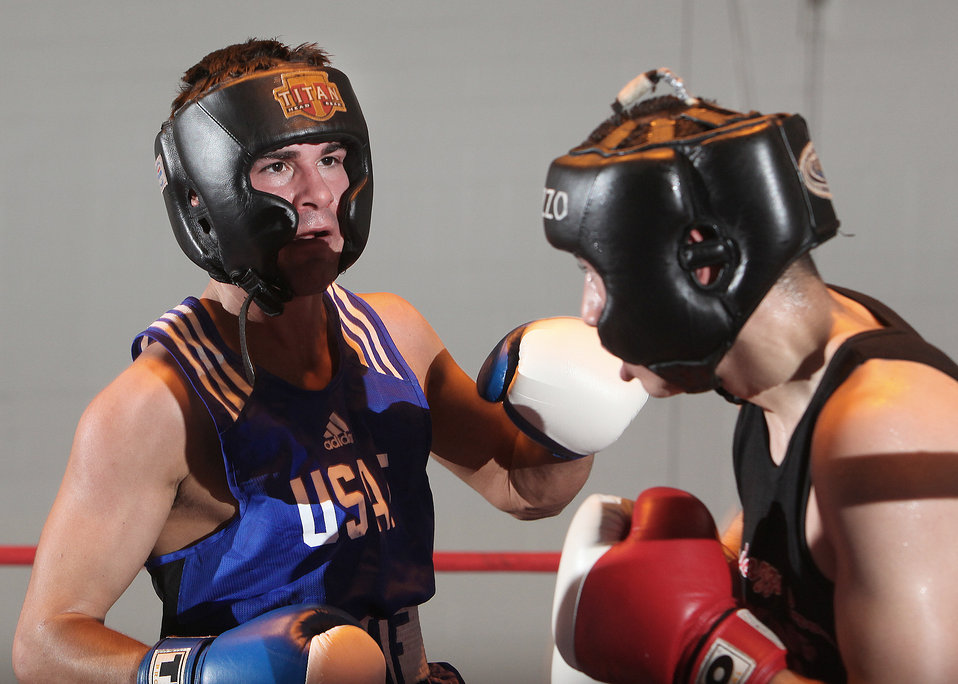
Air Force Box-offs

Lightweights James Barber (left) and Saul Montes compete during the Air Force Box-off tournament Jan. 22, 2011, at Lackland Air Force Base, Texas. Barber lost the decision. Barber is assigned to Tinker Air Force Base, Okla., and Montes is a civilian with the Randazzo Brothers Boxing Club in San Antonio.